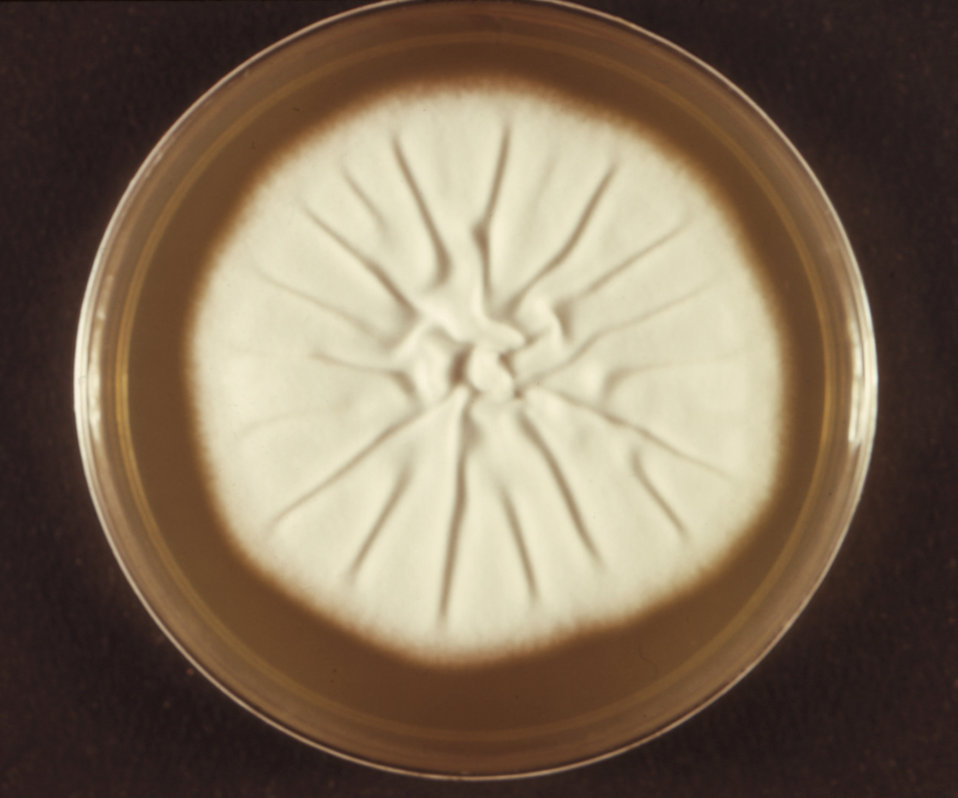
This image depicts a view from the front of a Petri dish in which a colony of the dermatophytic fungal organism Trichophyton mentagrophytes, formerly known as T. quinckeanum, had been cultivated. See PHIL 12656, for a view of this fungal colony from the reverse, or the back.